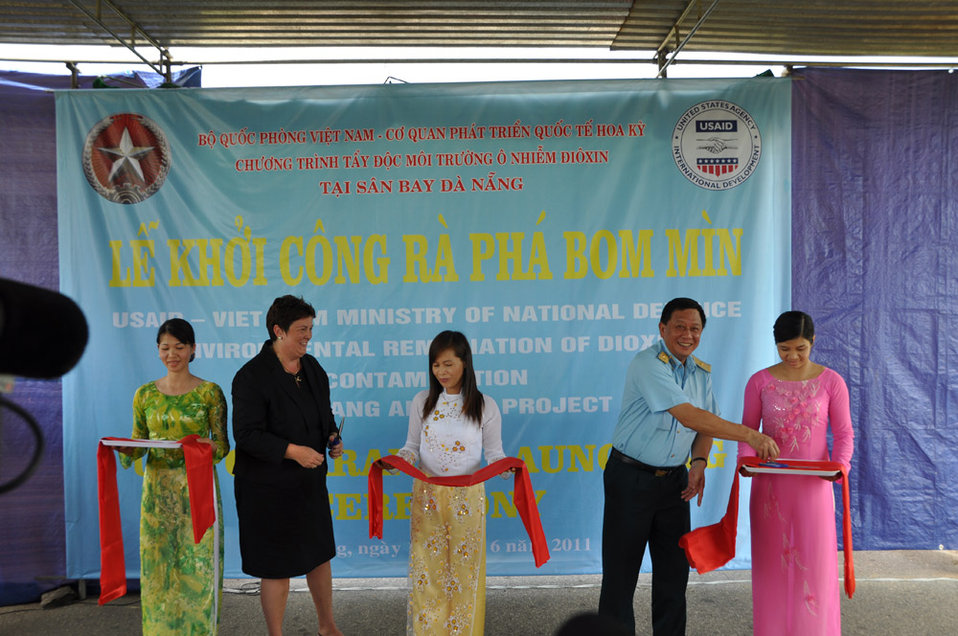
UXO clearance ceremony, June 17, 2011, in Danang, Vietnam.